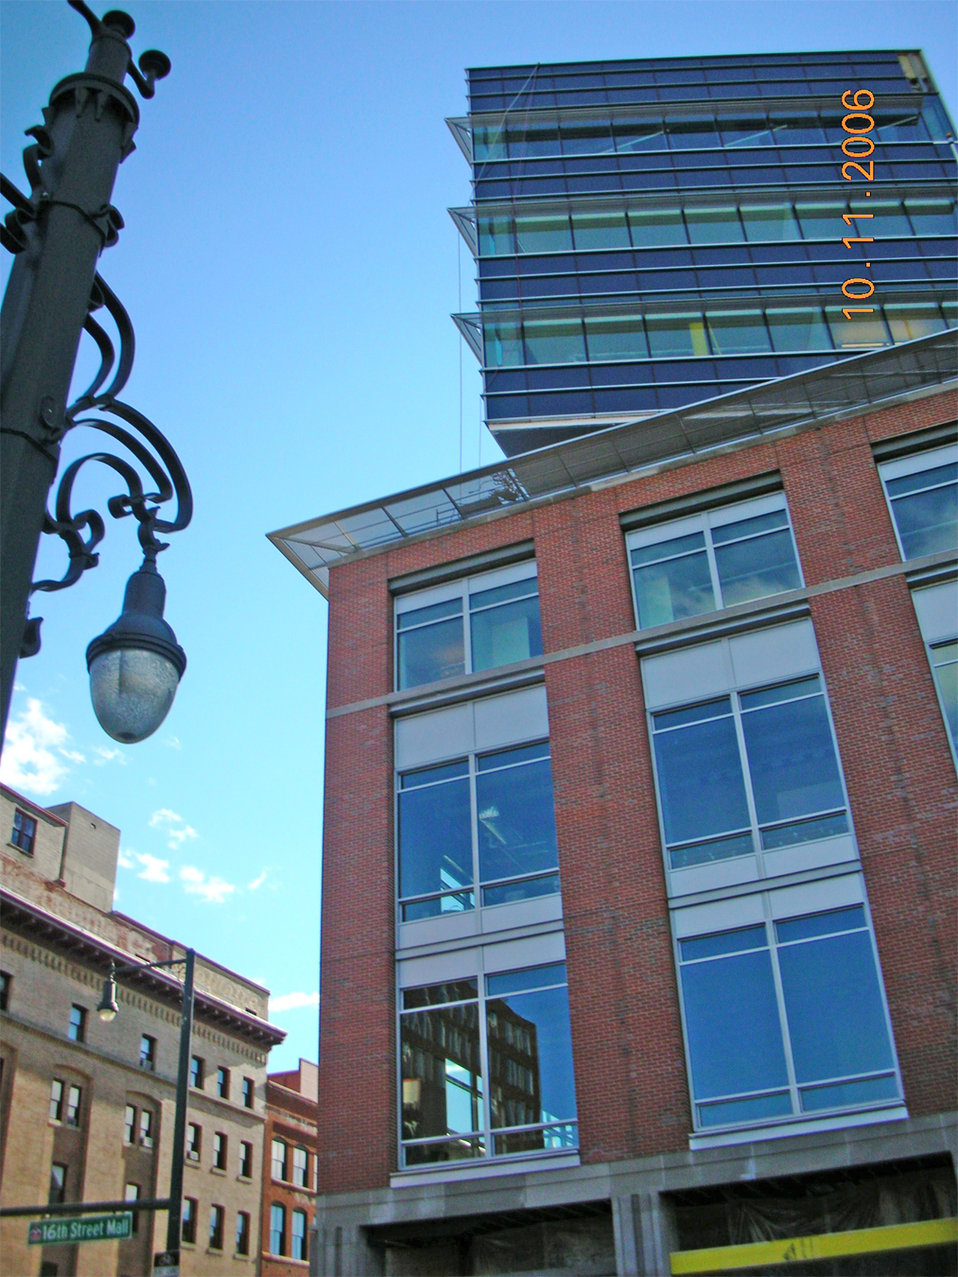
U.S. EPA Region 8 Green Office Building

EPA Region 8 is working to decrease its impact on the natural environment by working in a high performance, green building and paying close attention to the environmental impact of our daily activities.

To find out more about the Region 8 green building visit: www.epa.gov/region8/building/